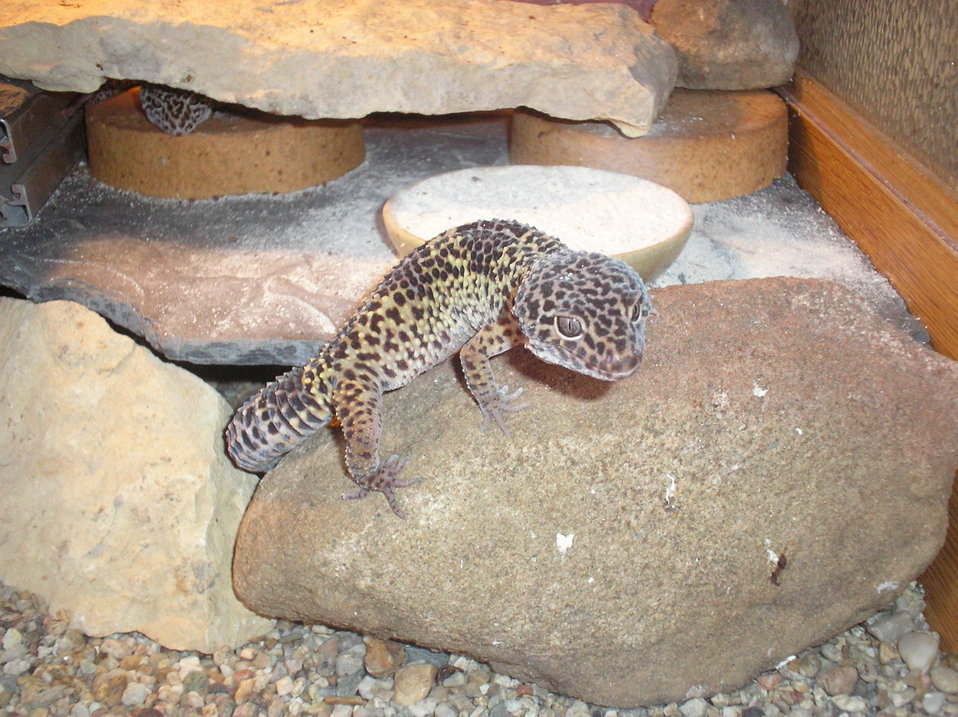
Čeština: Moji ještěři